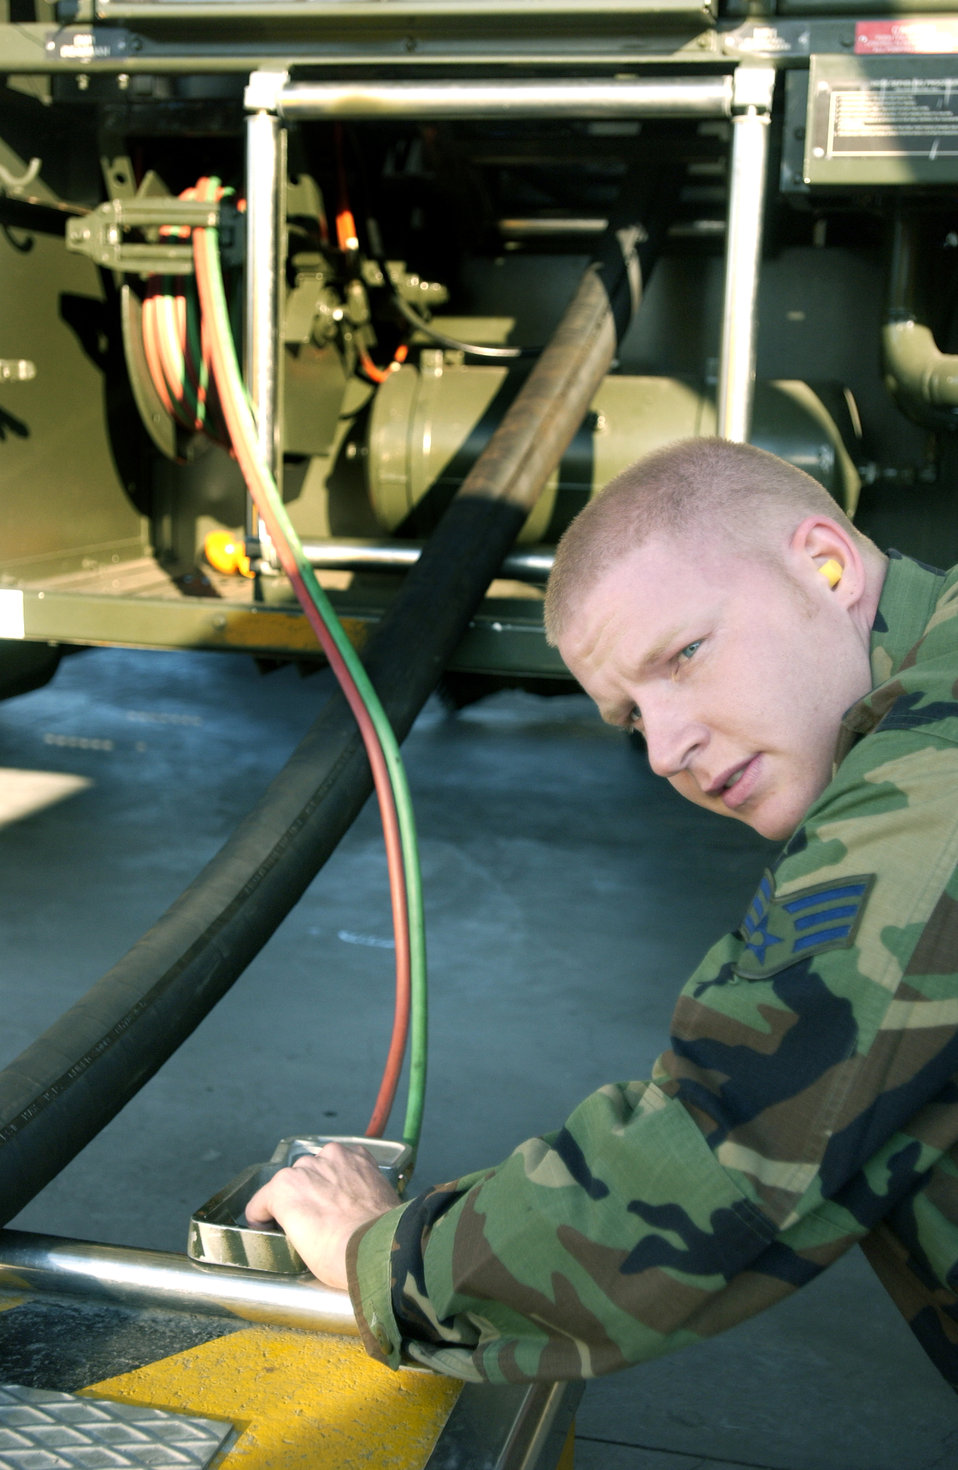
Checking it out

AVIANO AIR BASE, Italy -- Senior Airman Michael Baker inspects an R-11 vehicle here Sept. 20. Airman Baker is assigned to the Logistics Readiness Squadron.